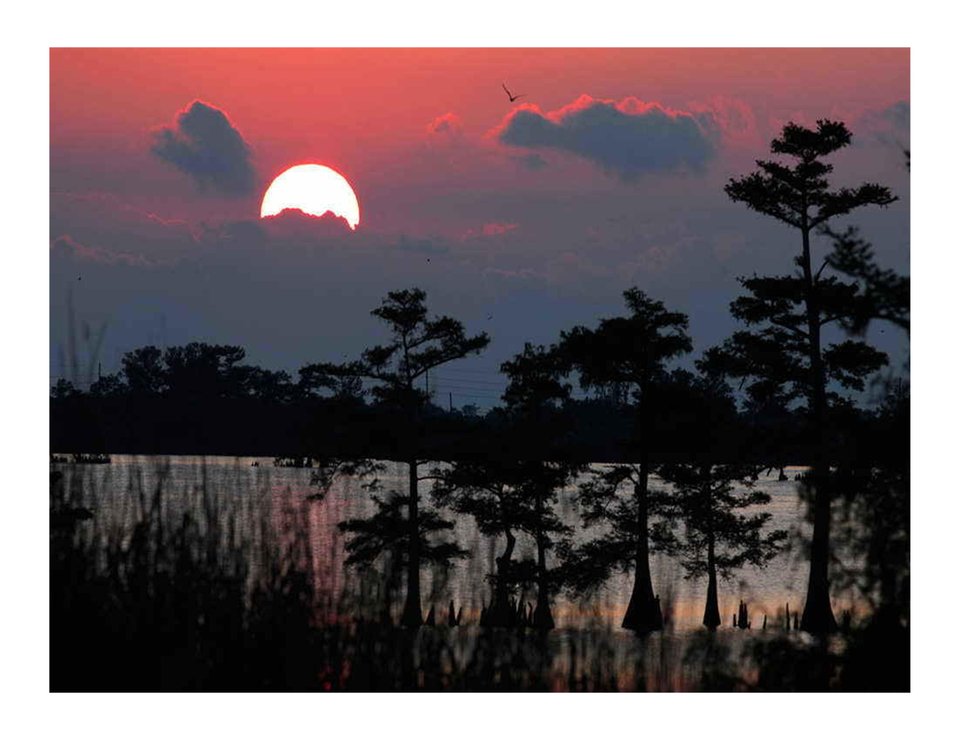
Sunset over the marsh, Louisiana